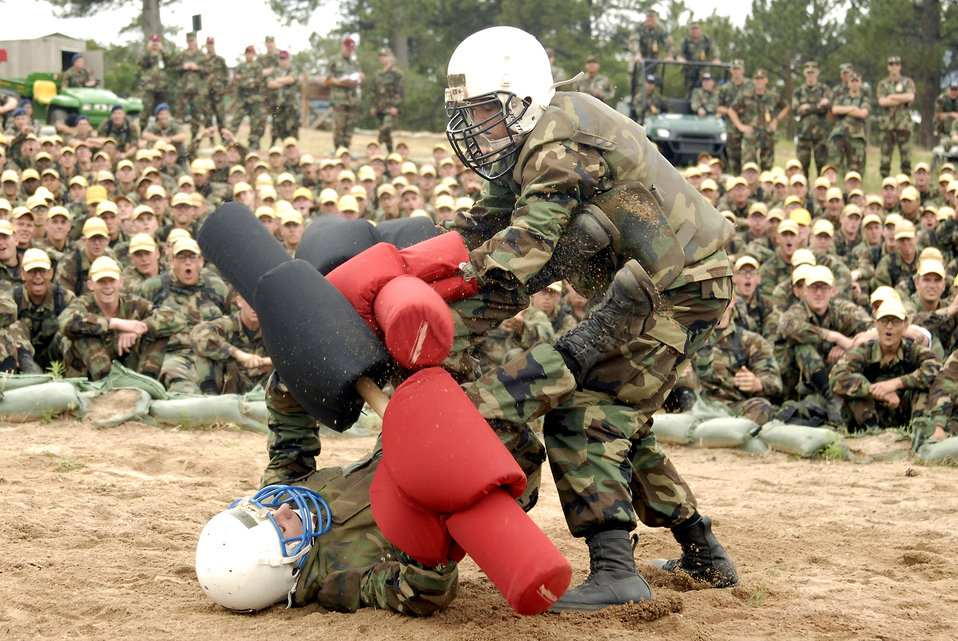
Academy cadets vie to become 'Big Bad Basic'

Academy basic cadet trainee Emily Frick (standing) bests her opponent during her semi-final match July 28 at the U.S. Air Force Academy, Colo. She went on to win the title of